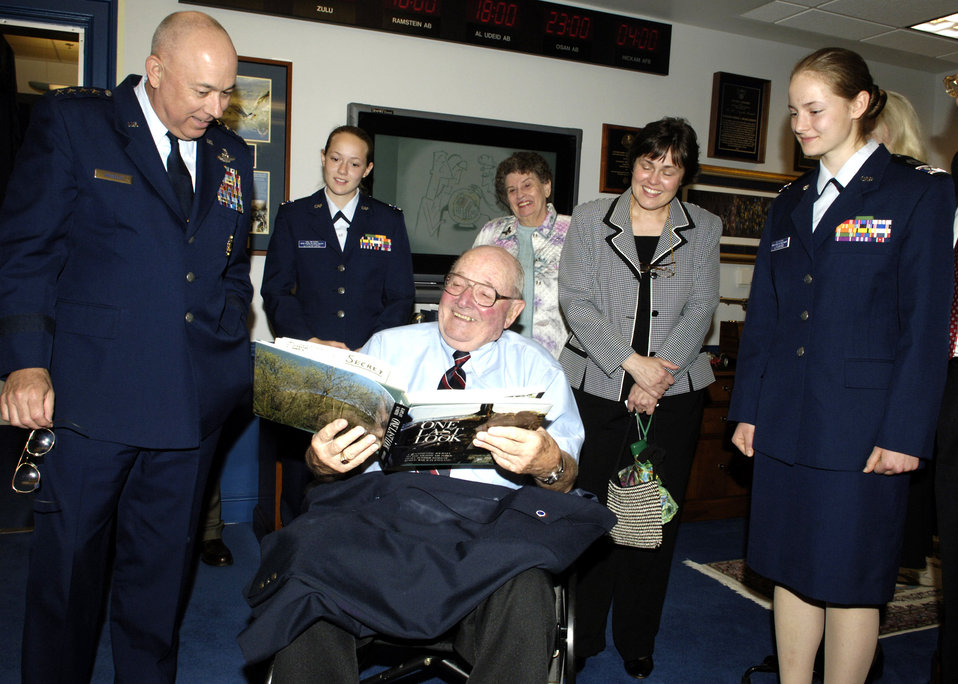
Spaatz Award

Civil Air Patrol Cadet Col. Katrina Litchford (right) and Air Force Chief of Staff Gen. T. Michael Moseley listen as Cadet Litchford's grandfather James Litchford Sr. shares an anecdote about flying B-17 bombers in WWII under the command of Gen. Carl A. Spaatz. General Moseley had just presented the Gen. Carl A. Spaatz Award to Cadet Litchford during a ceremony in the Pentagon on Thursday, May 11, 2006. Observing are Cadet Litchford's sister, Dominique, also a CAP cadet, and other family members.